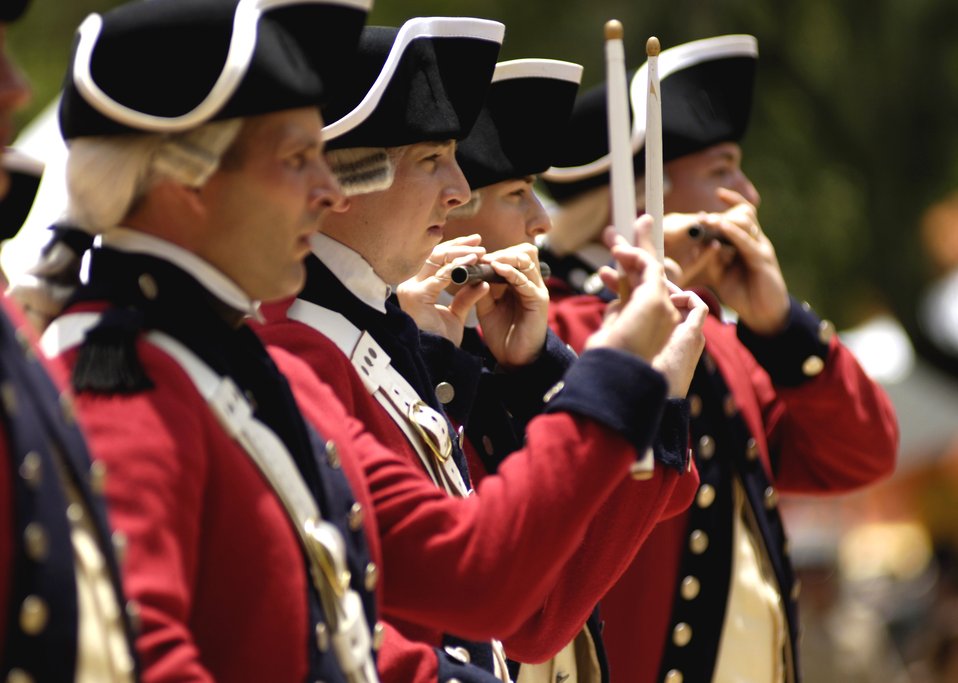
A salute to the troops

Members of the U.S. Army's Old Guard Fife and Drum Corps perform at a concert on Saturday, May 6, 2006, in downtown Honolulu. The group, part of the 3rd United States Infantry Regiment, is the only unit of its kind in the armed forces. The uniforms are patterned after those worn by the musicians in George Washington's Continental Army. The performance was part of a USO